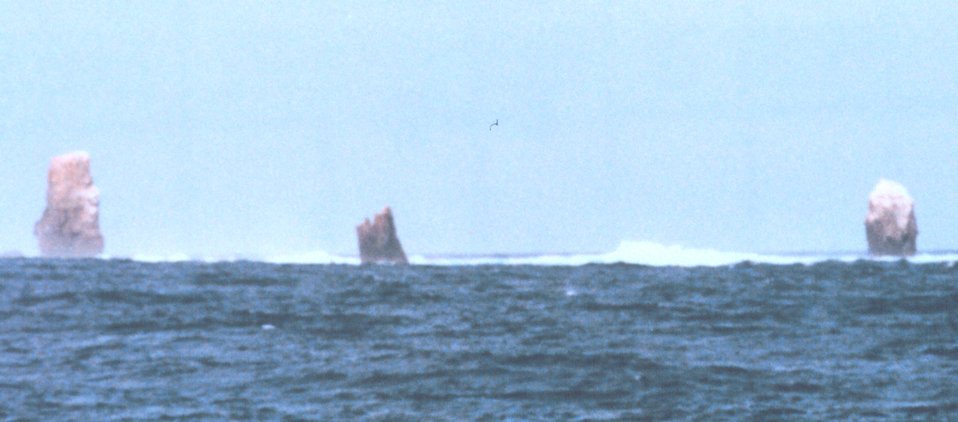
Alijos Rocks in the middle of nowhere off the Mexican Coast.